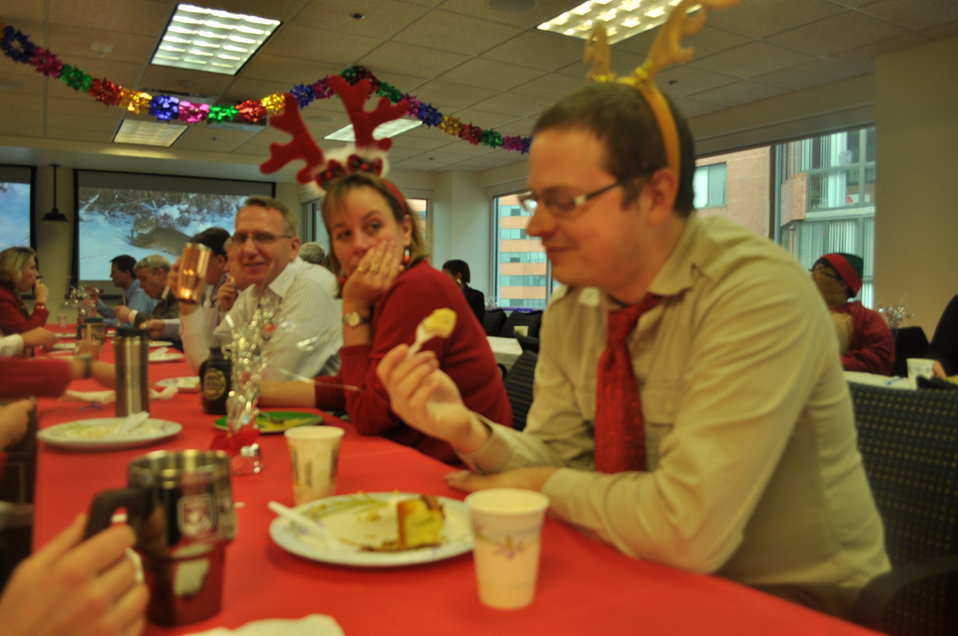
employees enjoying breakfast